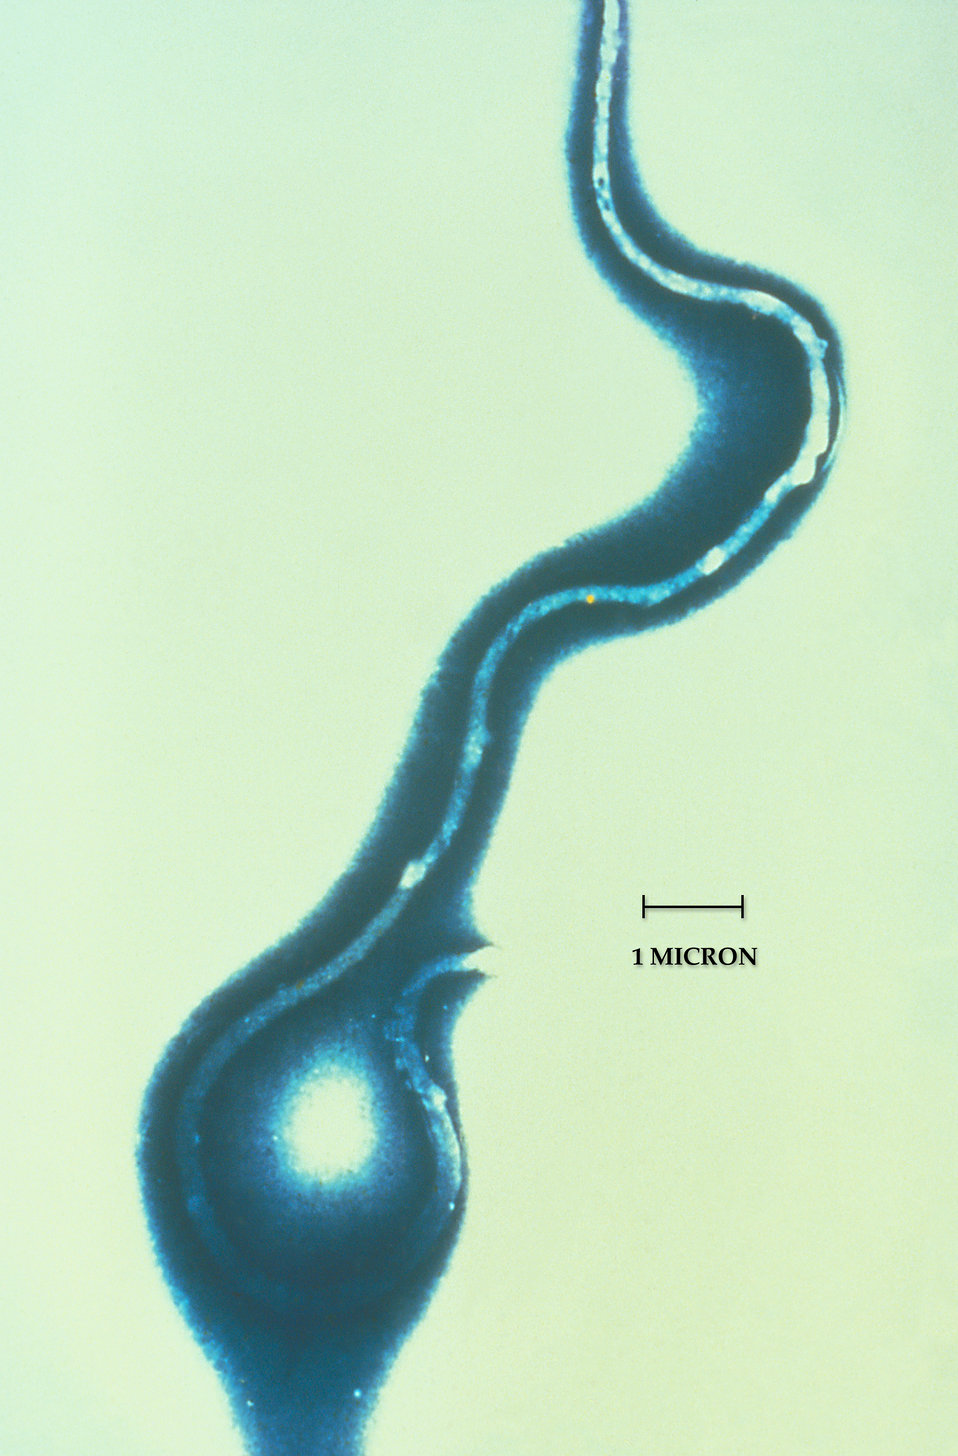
Photomicrograph of Borrelia burgdorferi, the bacterium that cause Lyme disease.